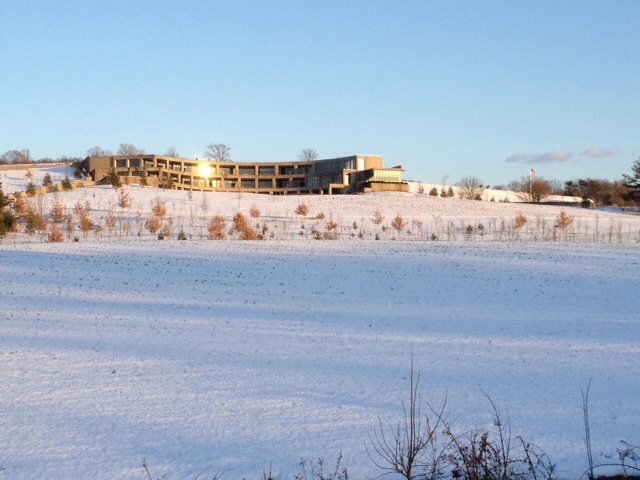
Library of Congress Packard Campus Snow March 6, 2013